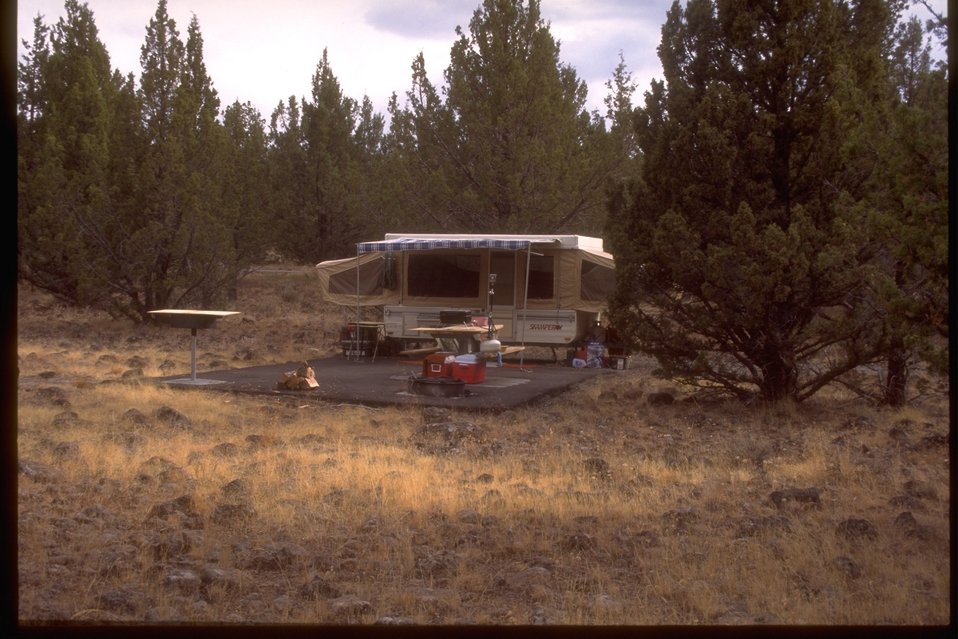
South Steens Loop Campground.